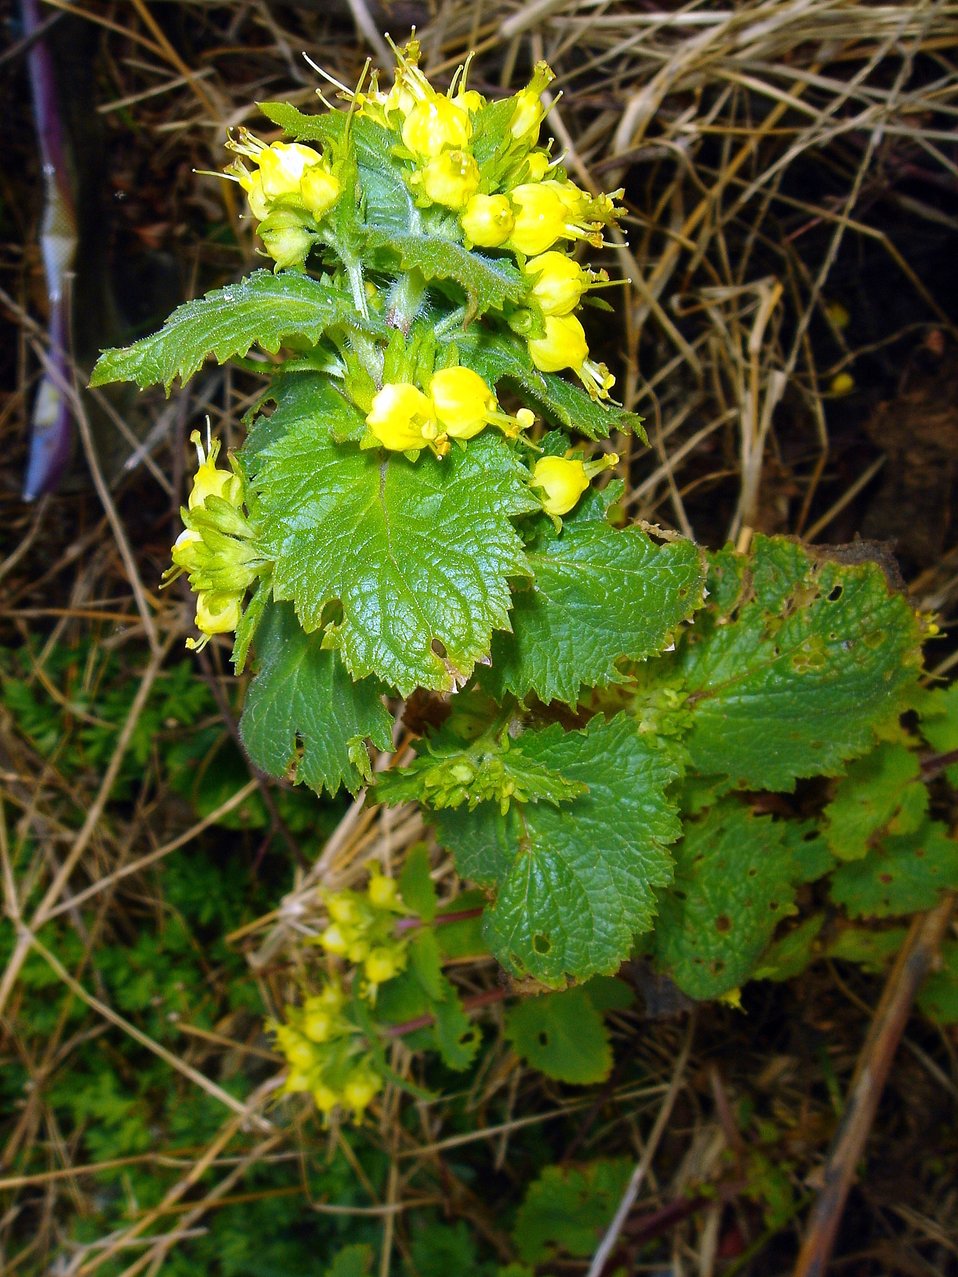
Scrophularia chrysantha